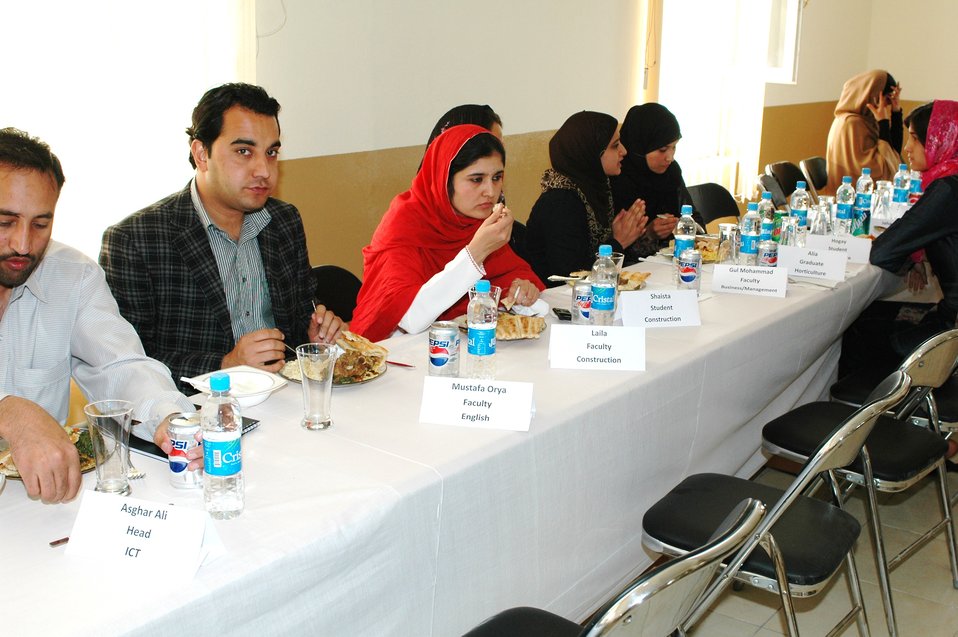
Dr Shah Visits Votech in Kabul